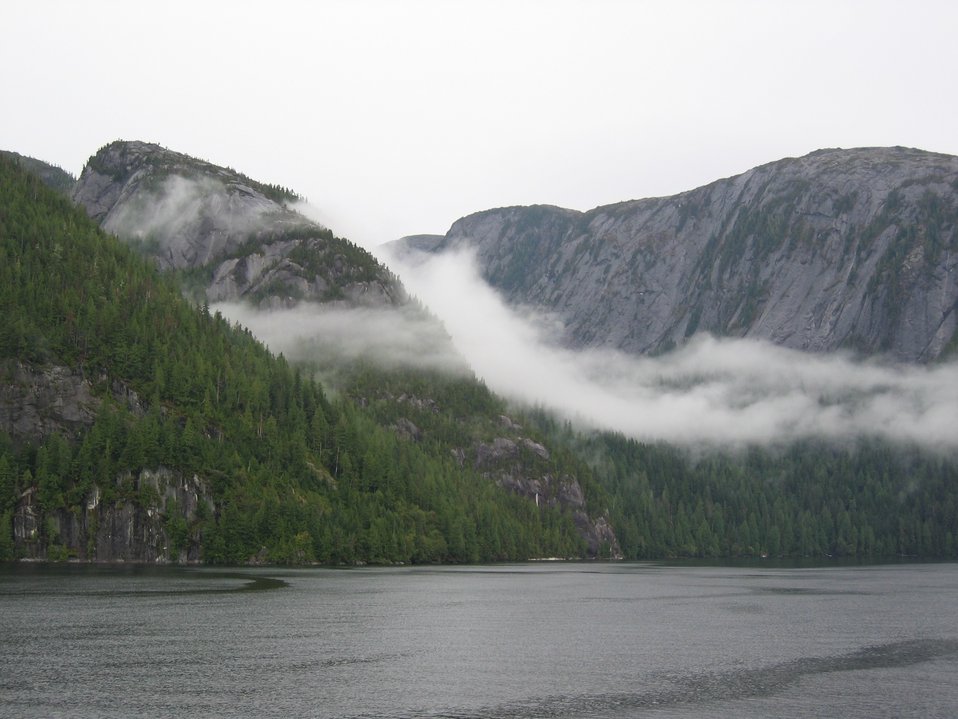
Fog filling a glacial valley.